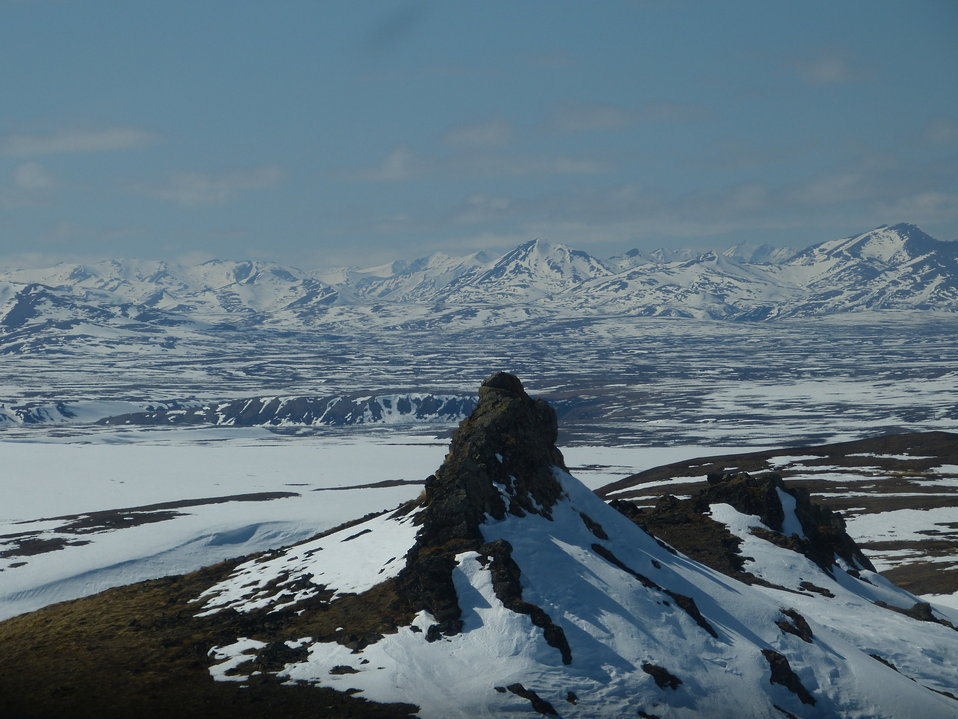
Kilbuck Mountains May2013 KSowl

Cliff-nesting raptor survey, Kilbuck Mountains, Yukon Delta National Wildlife Refuge

Photo credit: Kristine Sowl,
USFWS, YDNWR